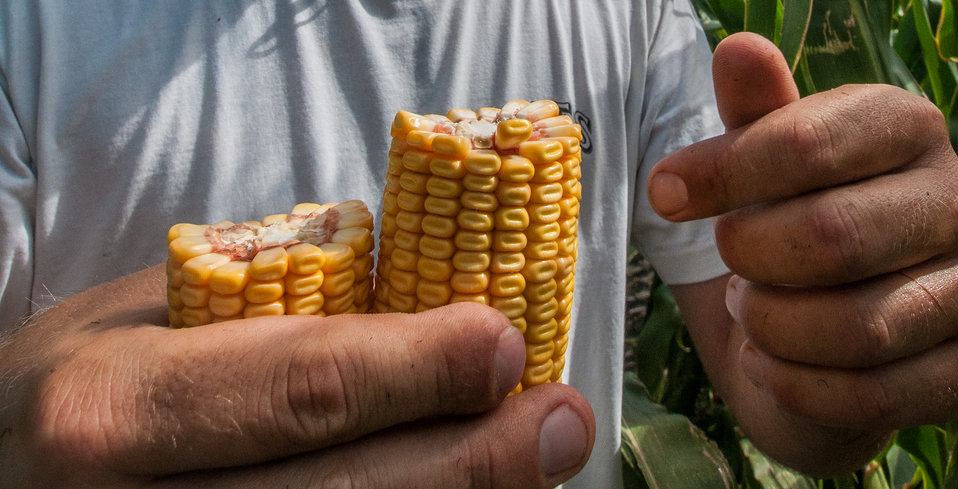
Philip Marek checks the health of a crop of #2 yellow corn at his father's farm in Wharton County, TX on Jun. 20, 2013. Philip Marek has been a farm owner since 2010 and started with 210 acres. Marek and his cousin Josh Marek were able to use a U.S. Department of Agriculture (USDA) Farm Services Agency (FSA) small and new farmer and rancher loan programs provided them the ability to handle initial business start-up and equipment purchase.